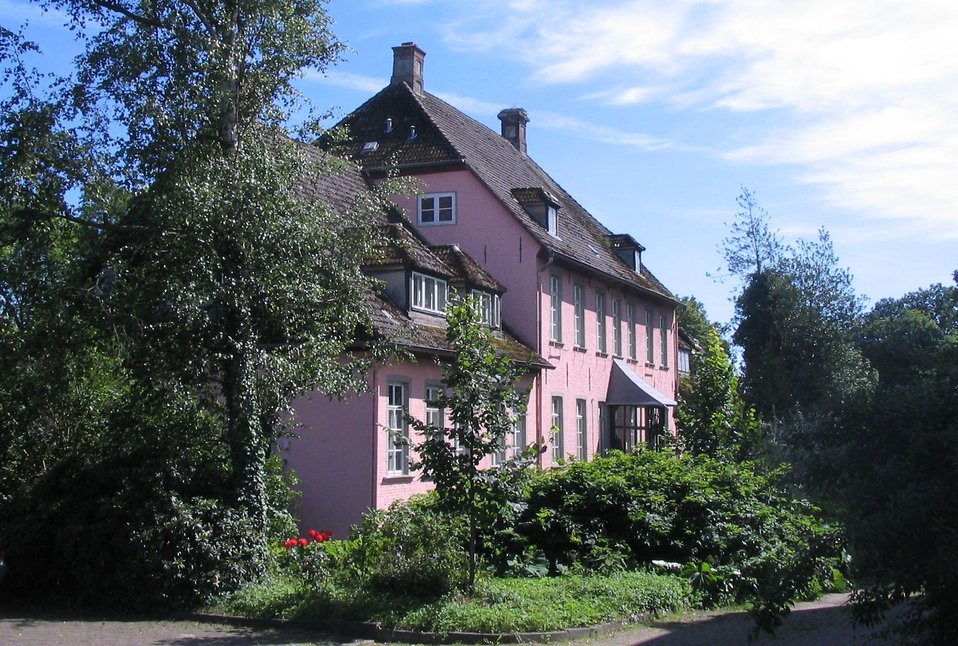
Deutsch: Dammgut in Ritterhude, Niedersachsen.